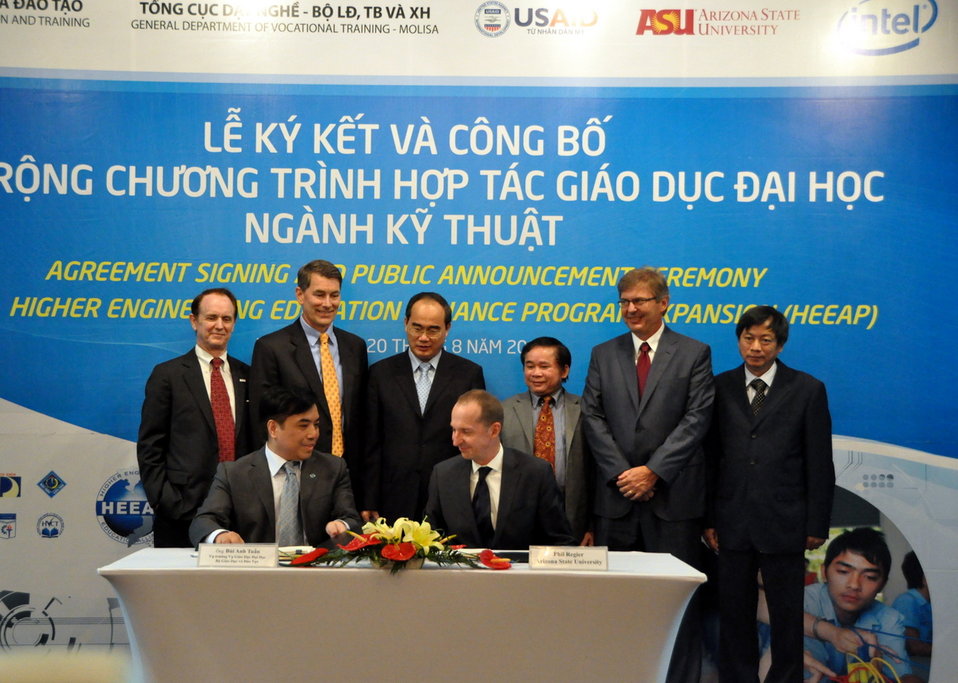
Higher Engineering Education Alliance Program Expansion Launch

Hanoi, August 20, 2012.